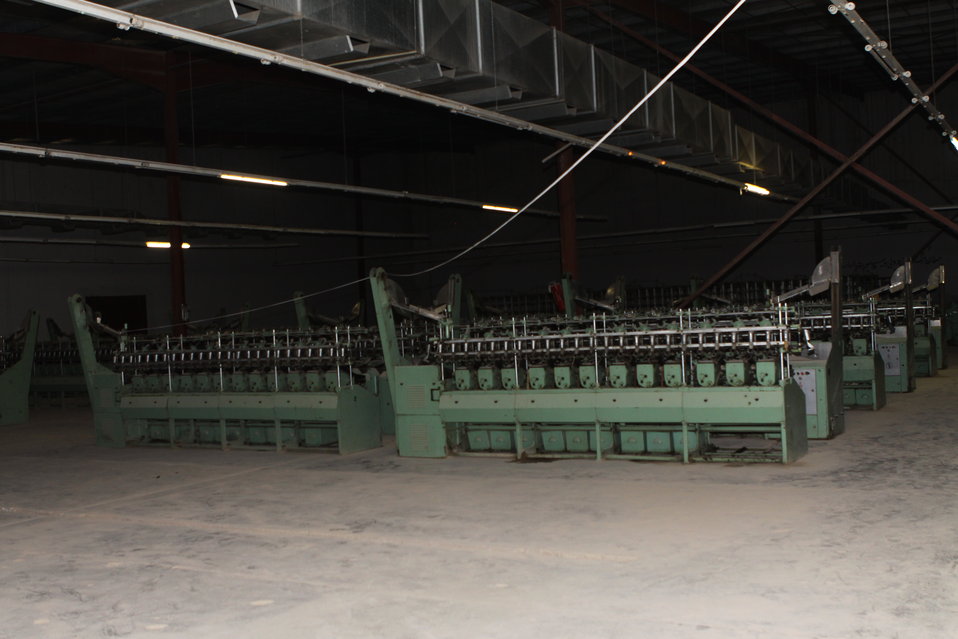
100525 Hirat Textile Company 732